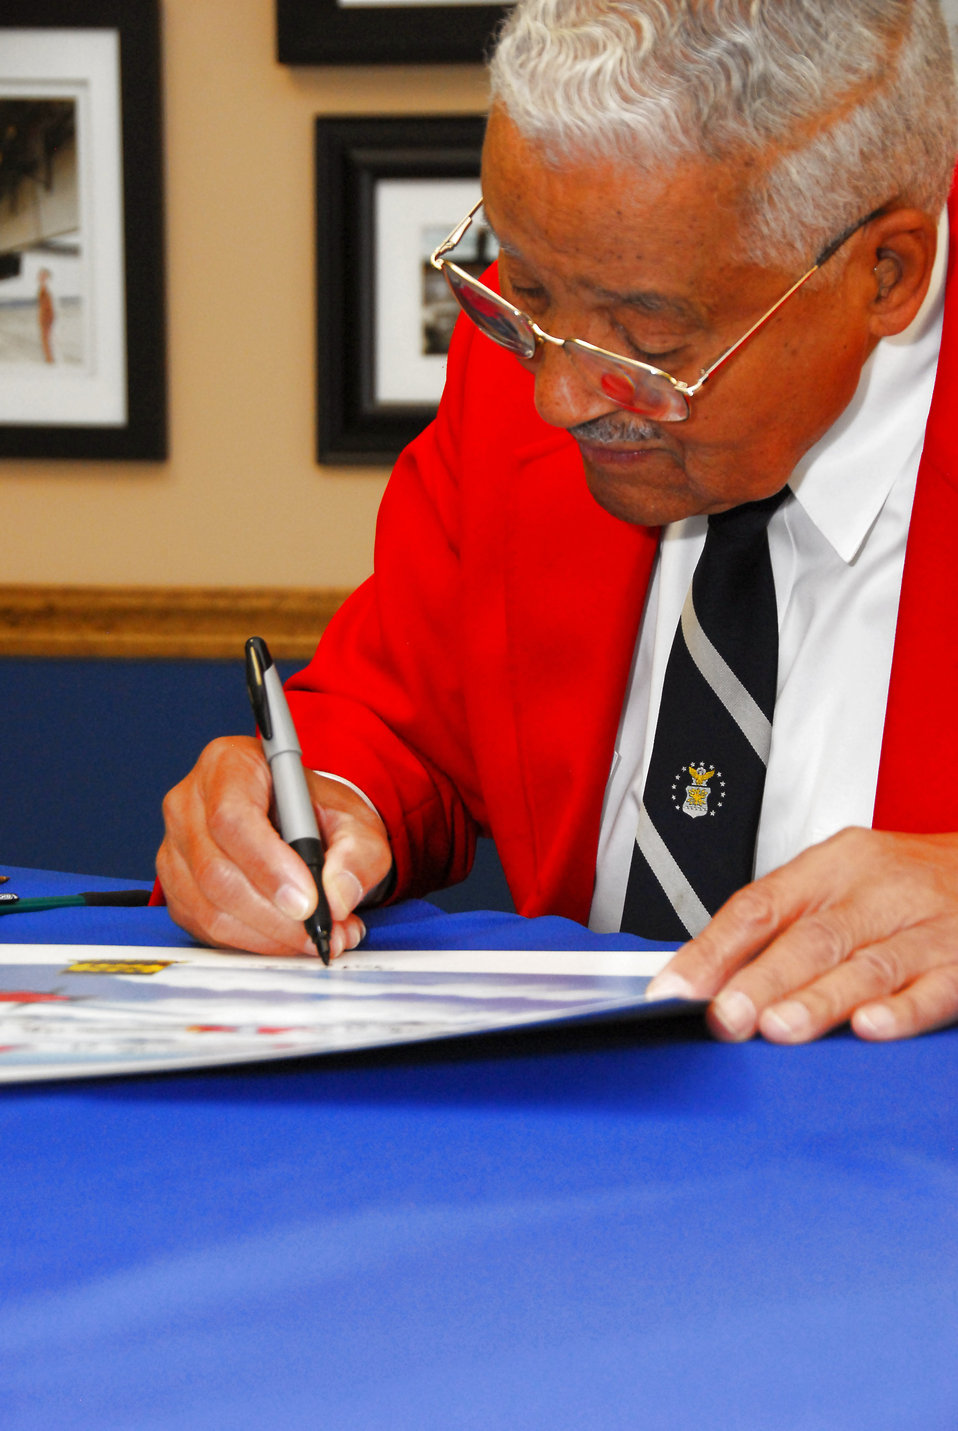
Historic Tuskegee Airmen address Air Force captains

Retired Col. Charles McGee, one of the original Tuskegee Airmen, signs autographs after speaking to Squadron Officer School students at the Warrior Symposium at Maxwell Air Force Base, Ala., Oct. 16.